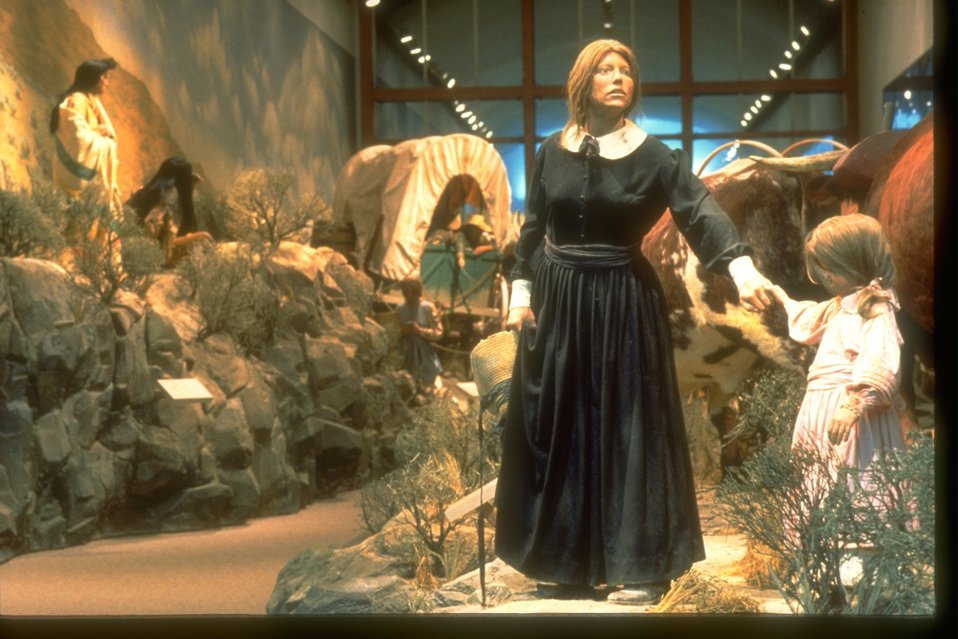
Mother and child standing outside of camp with Native Americans, wagons, and steers in the background.